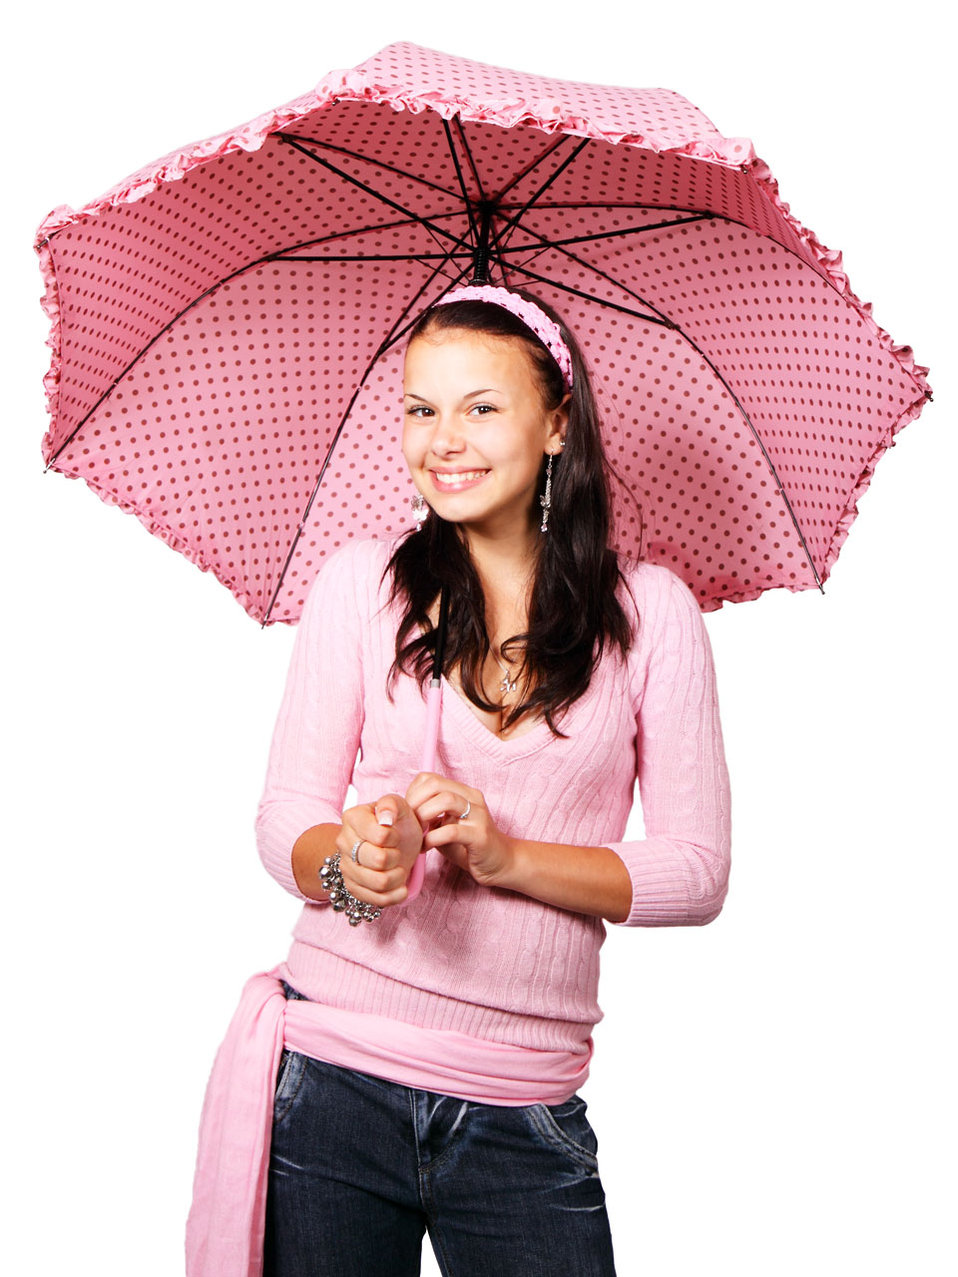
Woman with pink umbrella

Young woman with pink umbrella isolated on white background.